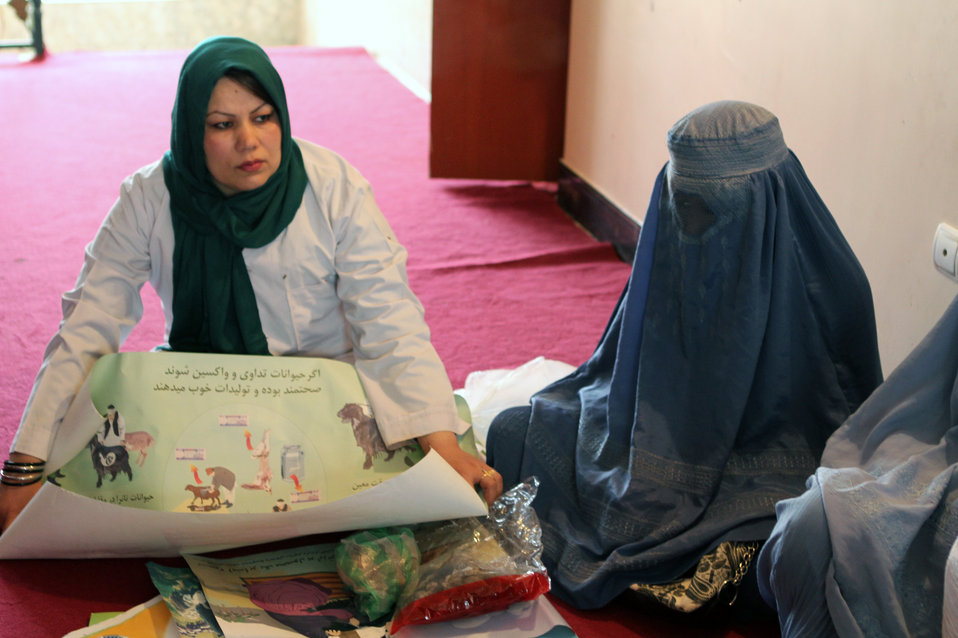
Development of Veterinary...